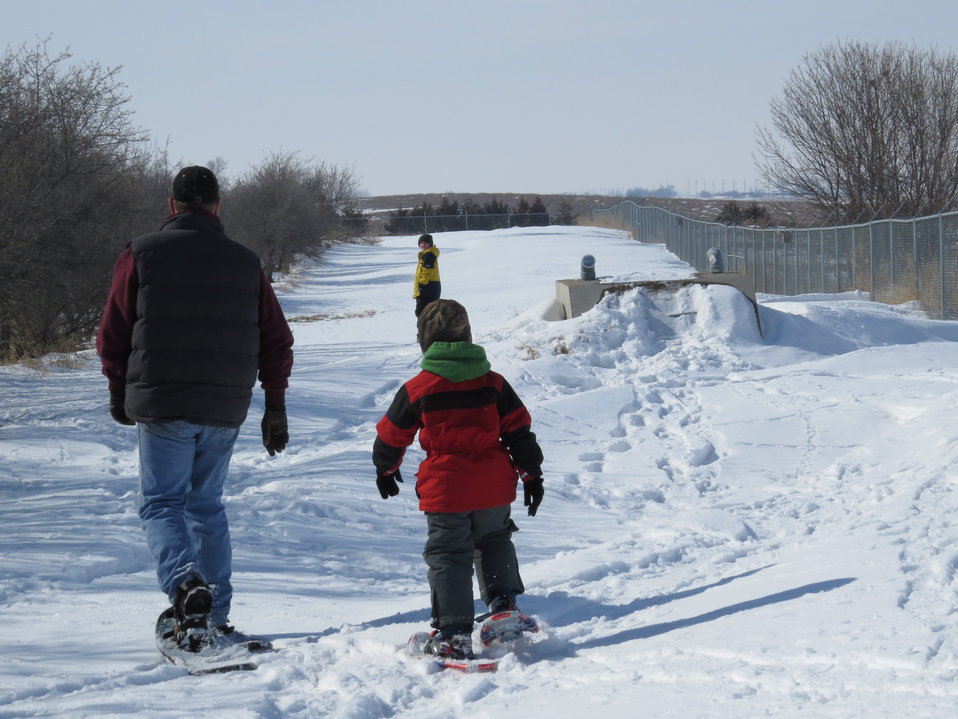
Winterfest 2013

Snow shoeing on our Maga Ta-Hohpi WPA.